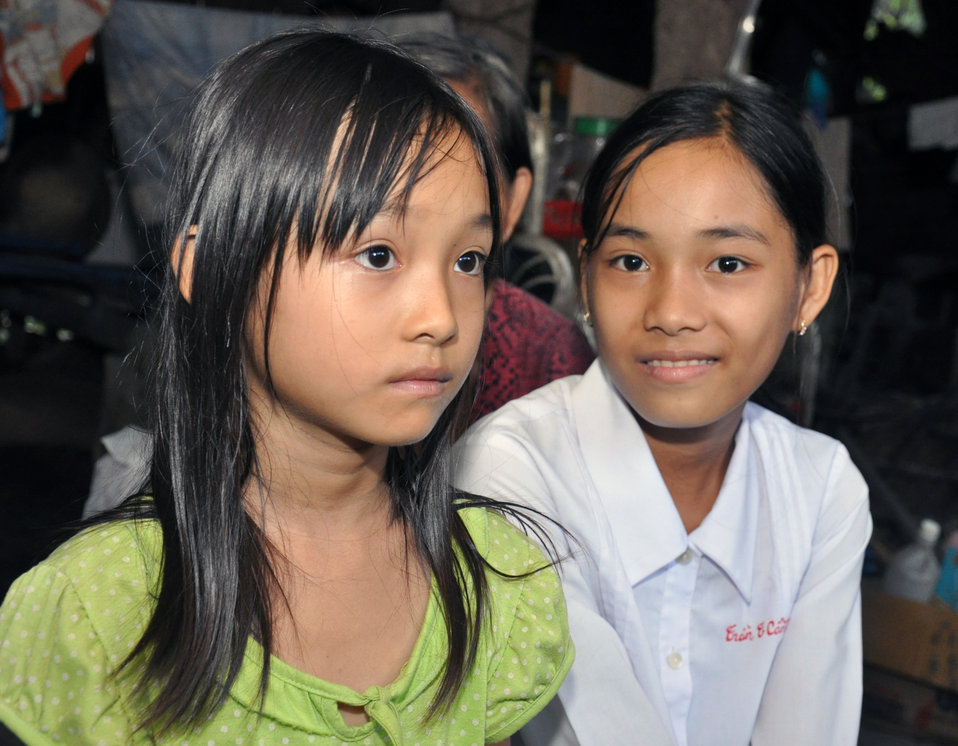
Supporting Girls Education in Vietnam